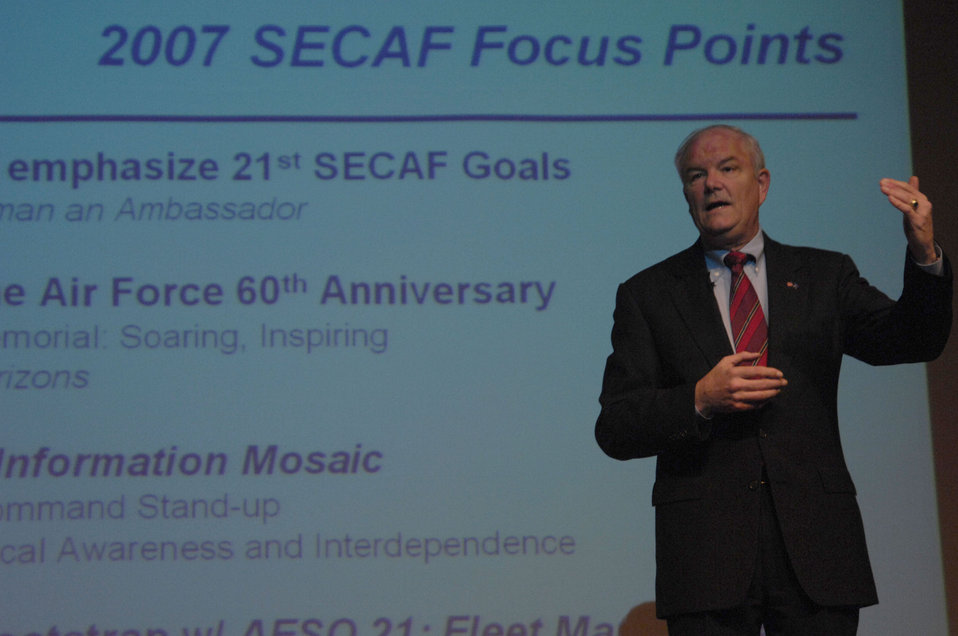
SECAF's town hall meeting

Secretary of the Air Force Michael W. Wynne discussed where he expects the Air Force to be in the future during his town hall meeting with Airmen and Air Force civilians at the Pentagon Jan. 31. Following his discussion of where he expects the Air Force to be in the future, he took questions from the audience.